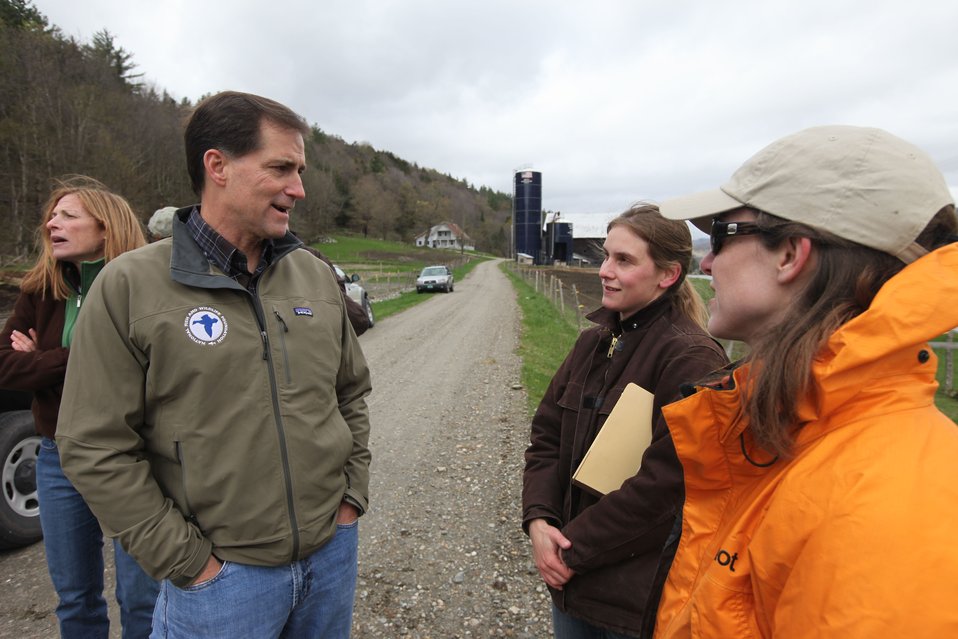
Dan Ashe at a tree planting event

U.S. Fish & Wildlife Service Director Dan Ashe visits the Northeast Region
for a tour of the White River National Fish Hatchery in Bethel, Vermont on
April 27, 2012. The hatchery was devastated by Tropical Storm Irene and
Dan Ashe had the chance to meet and thank the staff for their heroic work.
Director Ashe also visited restoration/flood response/fish passage project
sites in Rochester, Vermont and met with local officials and staff from the
White River Partnership.